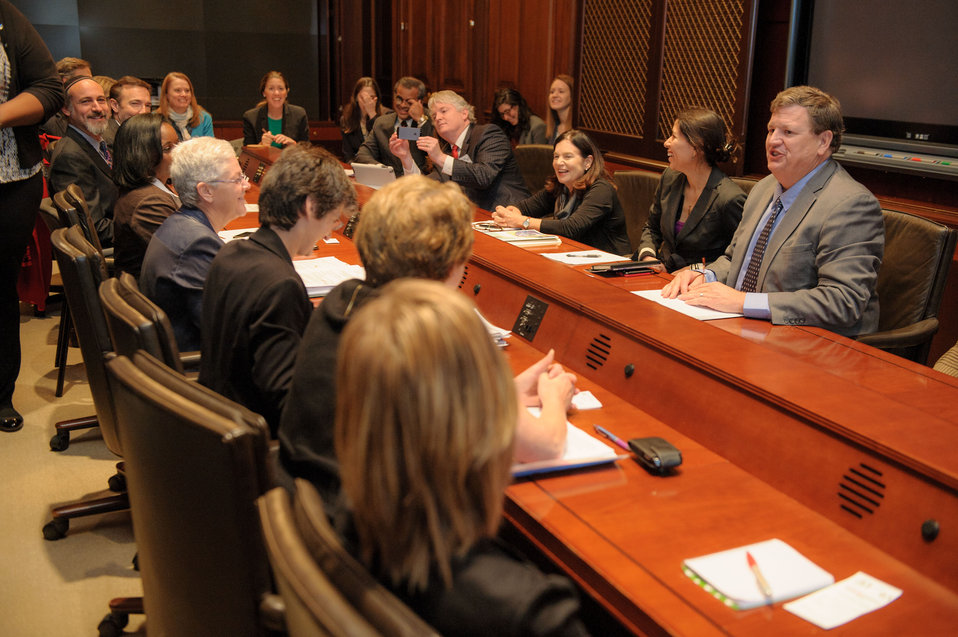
November 12, 2013 - Administrator Gina McCarthy Meets with Faith Leadership

Administrator Gina McCarthy met on Tuesday, November 12, 2013 with representatives from the National Religious Partnership for the Environment.

USEPA Photo by Eric Vance. Public domain image